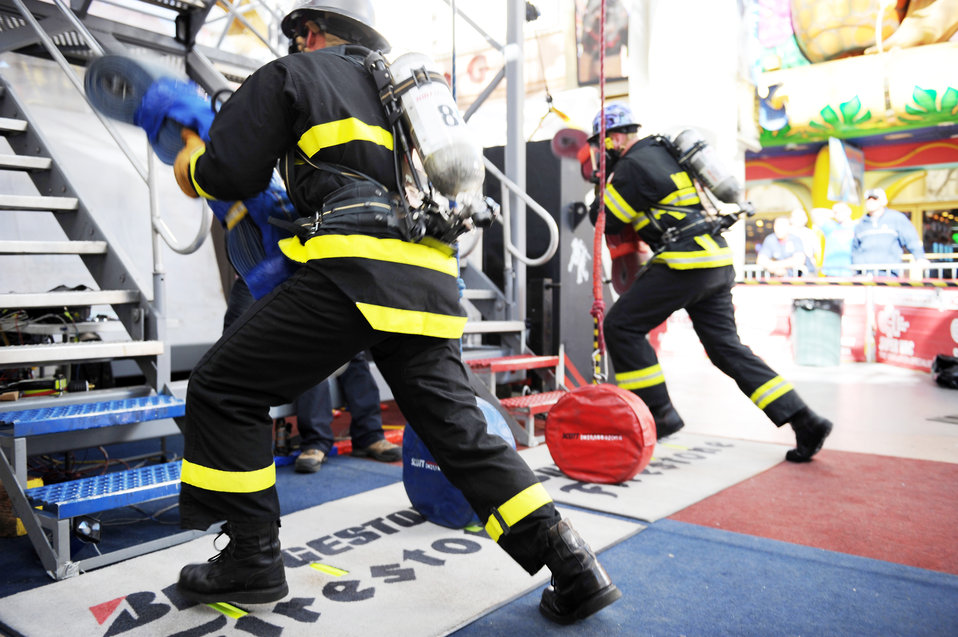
Airmen compete in 2009 Scott Firefighter Combat Challenge

Firefighters from all around the world compete in an individual firefighter event Nov. 17, 2009, at the 2009 Scott Firefighter Combat Challenge in Las Vegas.